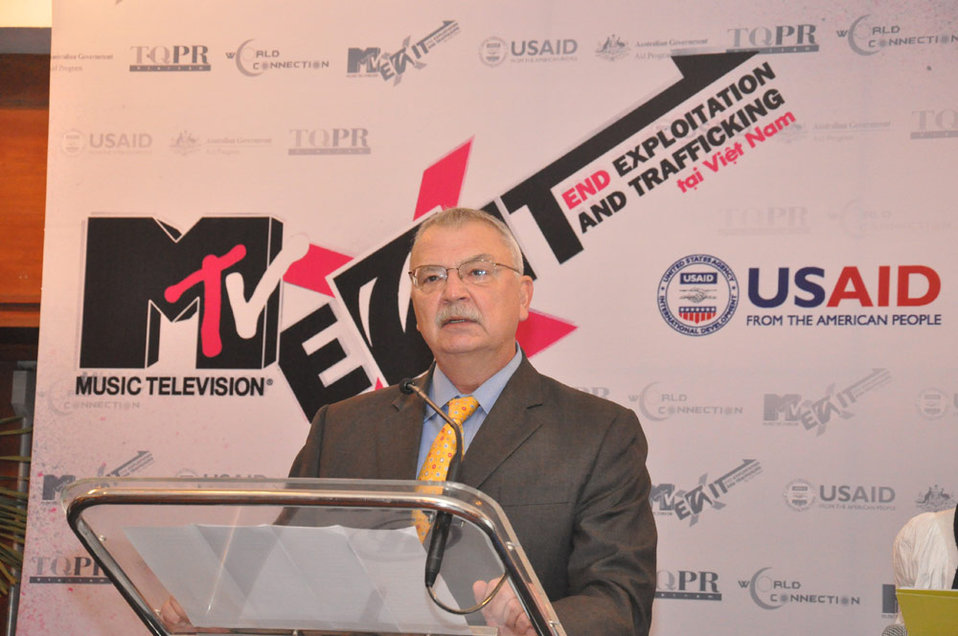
U.S. Ambassador Michael Michalak addresses the press launch of the MTV EXIT campaign in Hanoi.

USAID, MTV EXIT Press Launch, March 23, 2010